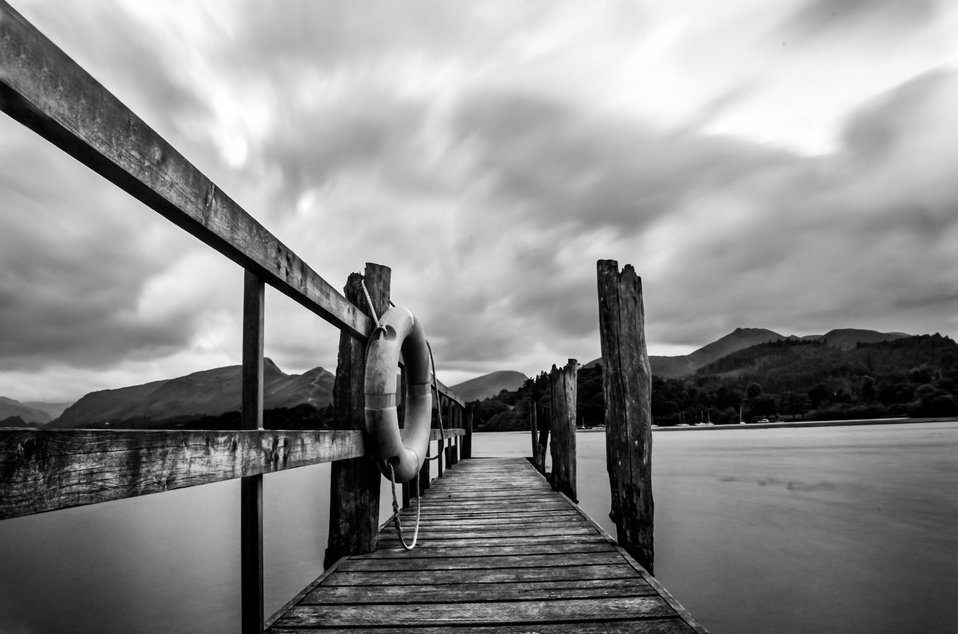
Pier on the water - black and white.